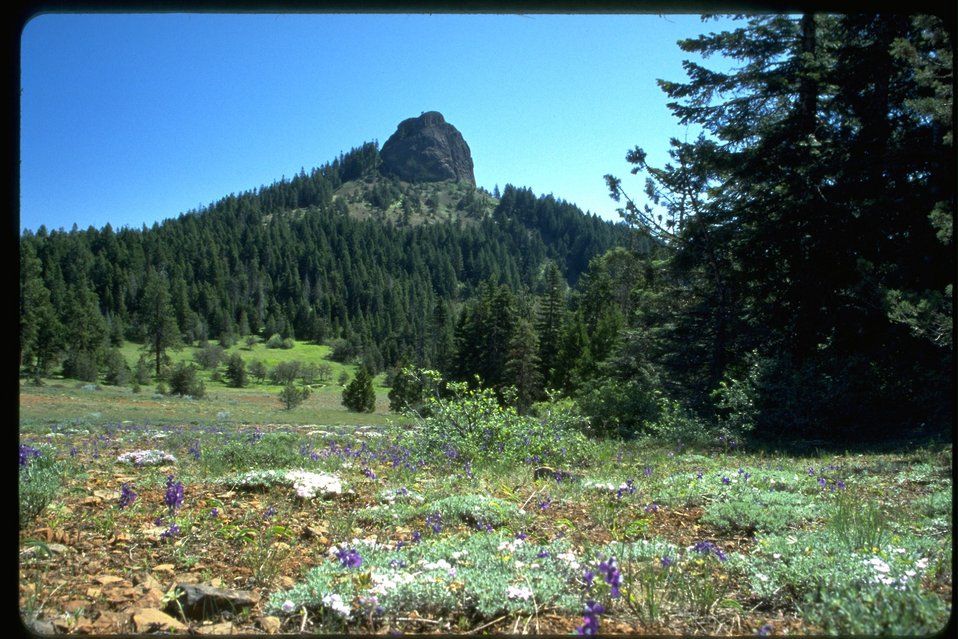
Long shot of Pilot Rock with Delphinium/Larkspur in foreground, Cascade-Siskiyou National Monument (CSNM).